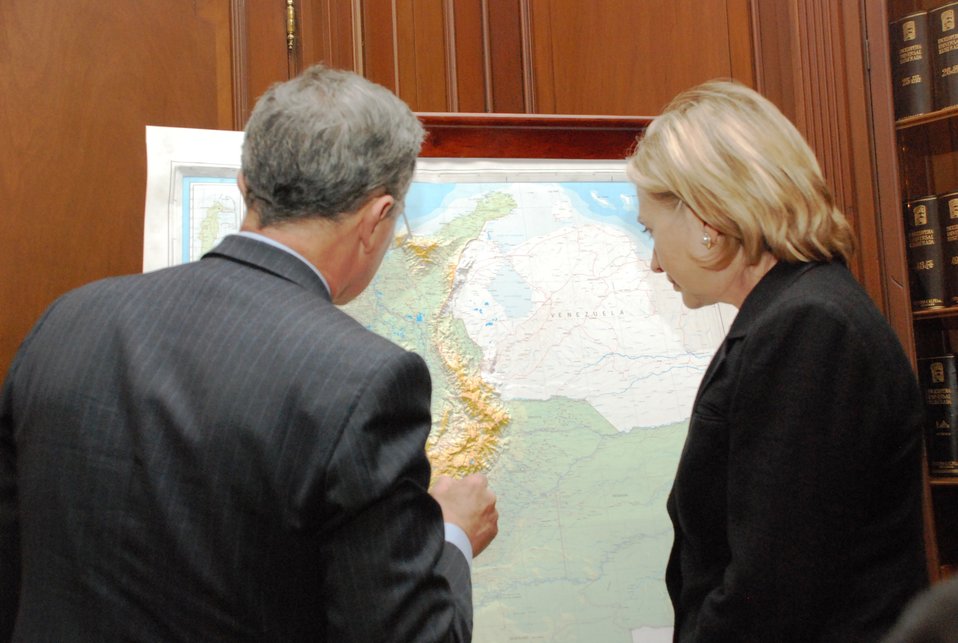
Secretary Clinton and Colombian President Discuss Bilateral Issues During Private Meeting

U.S. Secretary of State Hillary Rodham Clinton and Colombian President Uribe discuss bilateral issues during a private meeting in Bogotá, Colombia on June 9, 2010.